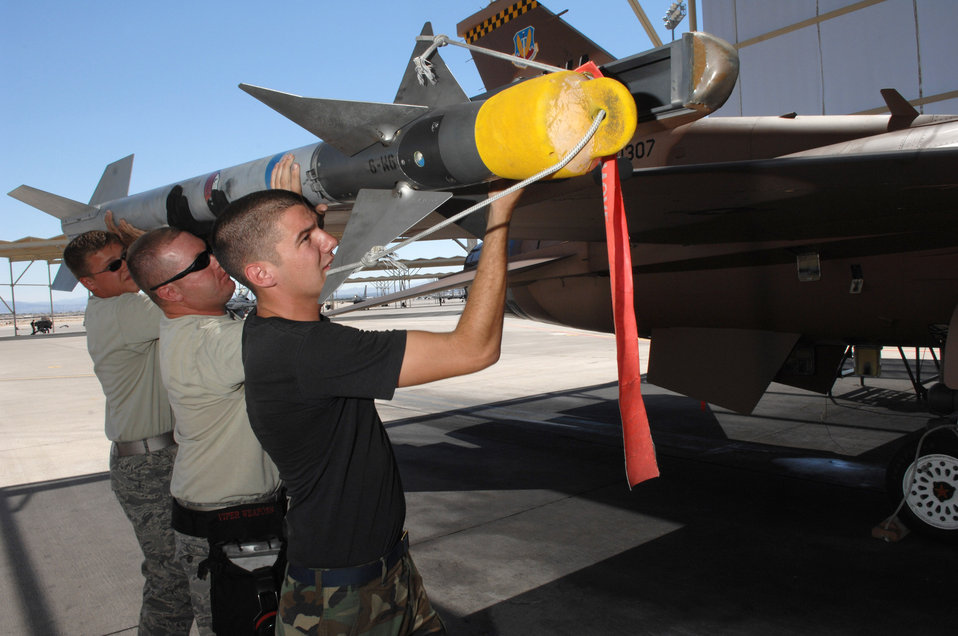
Teamwork

Senior Airman Gregory Strouse (left to right), Staff Sgt. Sean Minnick and Senior Airman David Garrison load a missile onto a F-16 Fighting Falcon July 24 at Nellis Air Force Base, Nev. The 926th Group is an Air Force Reserve unit under the 10th Air Force, Naval Air Station Joint Reserve Base, Fort Worth, Texas. The group is located at Nellis AFB as an associate unit to the Air Force Warfare Center. Through total force integration, reservists are integrated into active duty Air Force units, accomplishing the mission alongside active-duty Airmen on a daily basis. Airman Strouse is a 57th Aircraft Maintenance Squadron F-16 weapons load crew member, Sergeant Minnick is a 926th Group Det. 2 F-16 weapons loader team chief, and Airman Garrison is a 57th AMXS F-16 weapons load crew member.